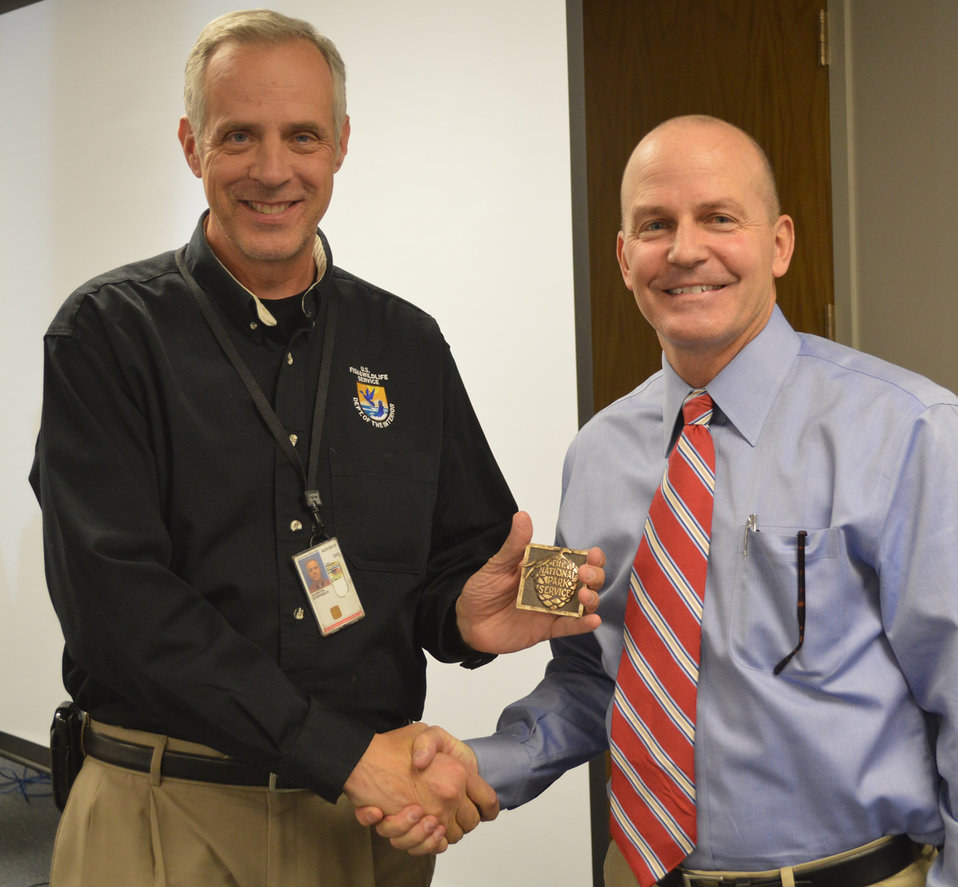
Regional Director Steve Guertin Moves on to Senior Leadership Position

On November 1, 2012, USFWS Mountain-Prairie Regional Director, Steve Guertin, served his last day as Regional Director before moving on to a senior leadership position at Headquarters.

Regional leadership and partners shared their memories of Steve's outstanding leadership and his unique ability to leverage his outstanding technical skills while maintaining a very personable persona - all amidst a variety of challenging issues.